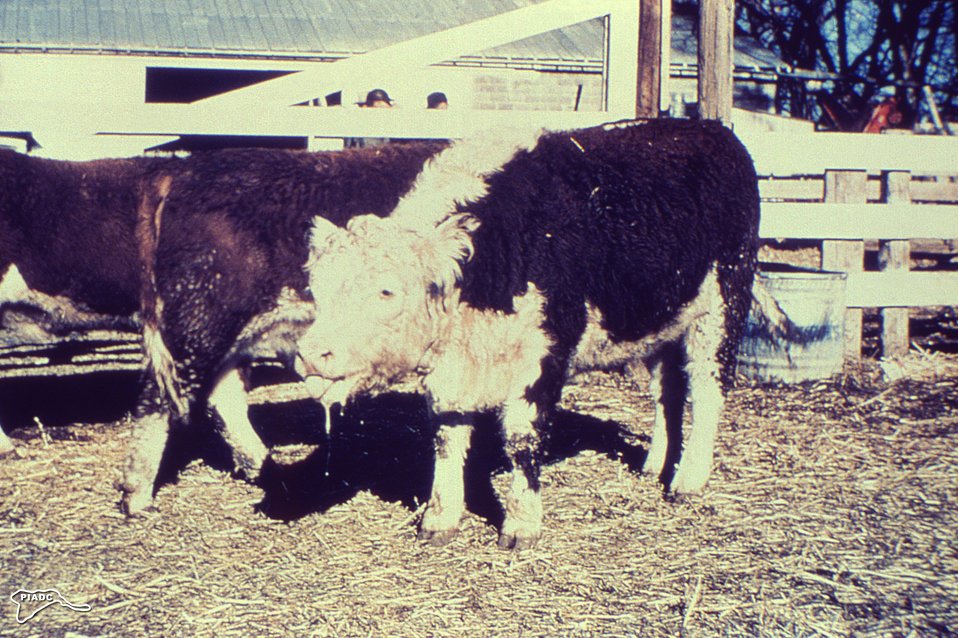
From the 'Illustrated Manual for the Recognition and Diagnosis of Certain Animal Diseases', published in 1982, by the Mexico-United States Commission for the Prevention of Foot and Mouth Disease, this photograph depicts an bovine animal suffering from infectious bovine rhinotracheitis (IBR). Note that this cow was breathing through its mouth, and salivating profusely.